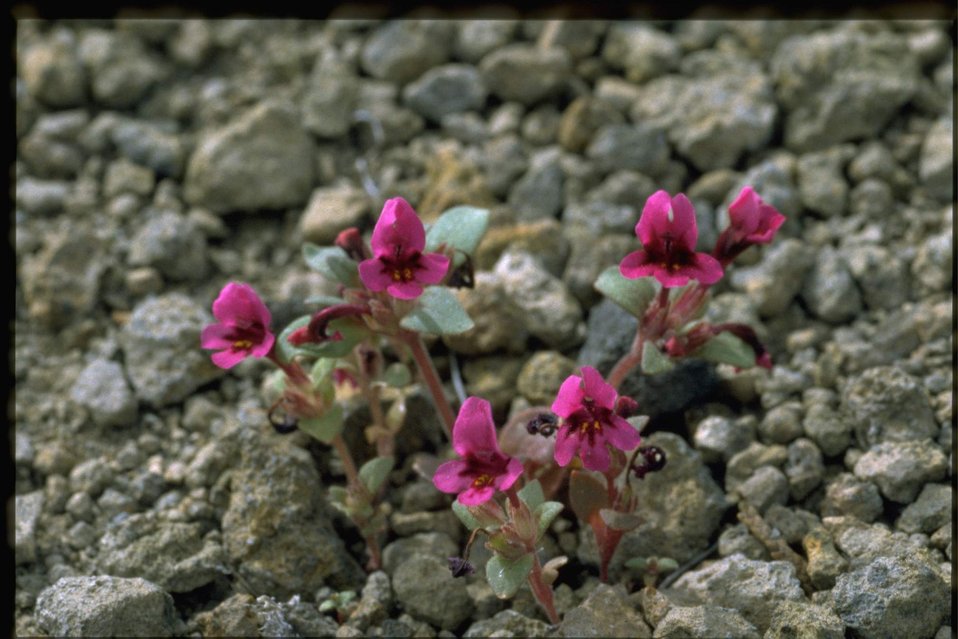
Medium shot of Cusick's monkey flower, Minulus cusickii.